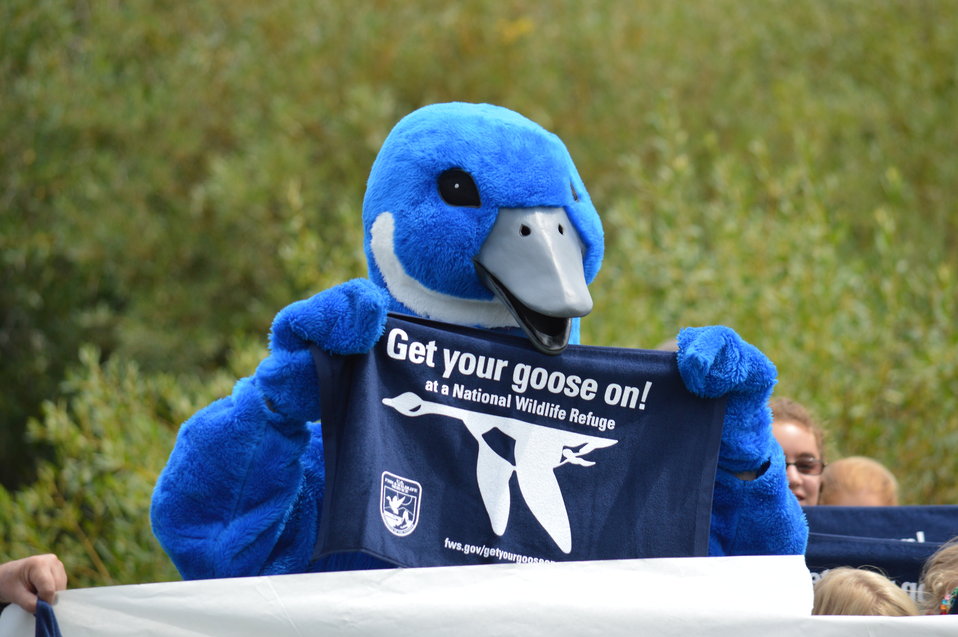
Get Your Goose On! - National Elk Refuge Style

On August 10, 2012 the U.S. Fish and Wildlife Service and Partners celebrated the 100 year anniversary of the establishment of the National Elk Refuge. In these photos, young attendees, along with Puddles the Blue Goose and the National Elk Refuge's mascot, showed us how to Get Your Goose On! with style.